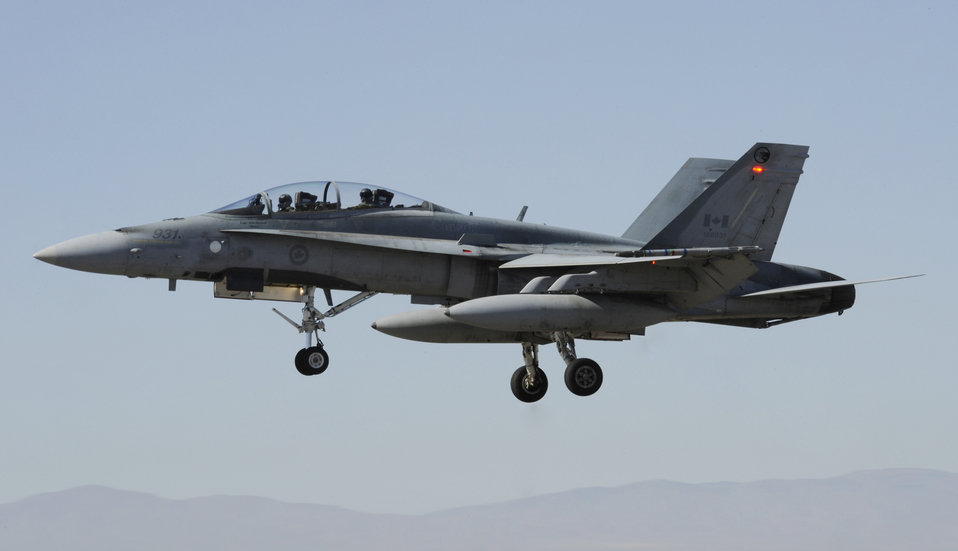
Gunfighter Flag wraps up

A CF-18 Hornet from the 409th Tactical Fighter Squadron at Cold Lake, Alberta, Canada, returns to Mountain Home Air Force Base, Idaho, after a simulated training mission Sept. 23 during Gunfighter Flag. The 409th's Hornets participated as friendly ?blue air forces